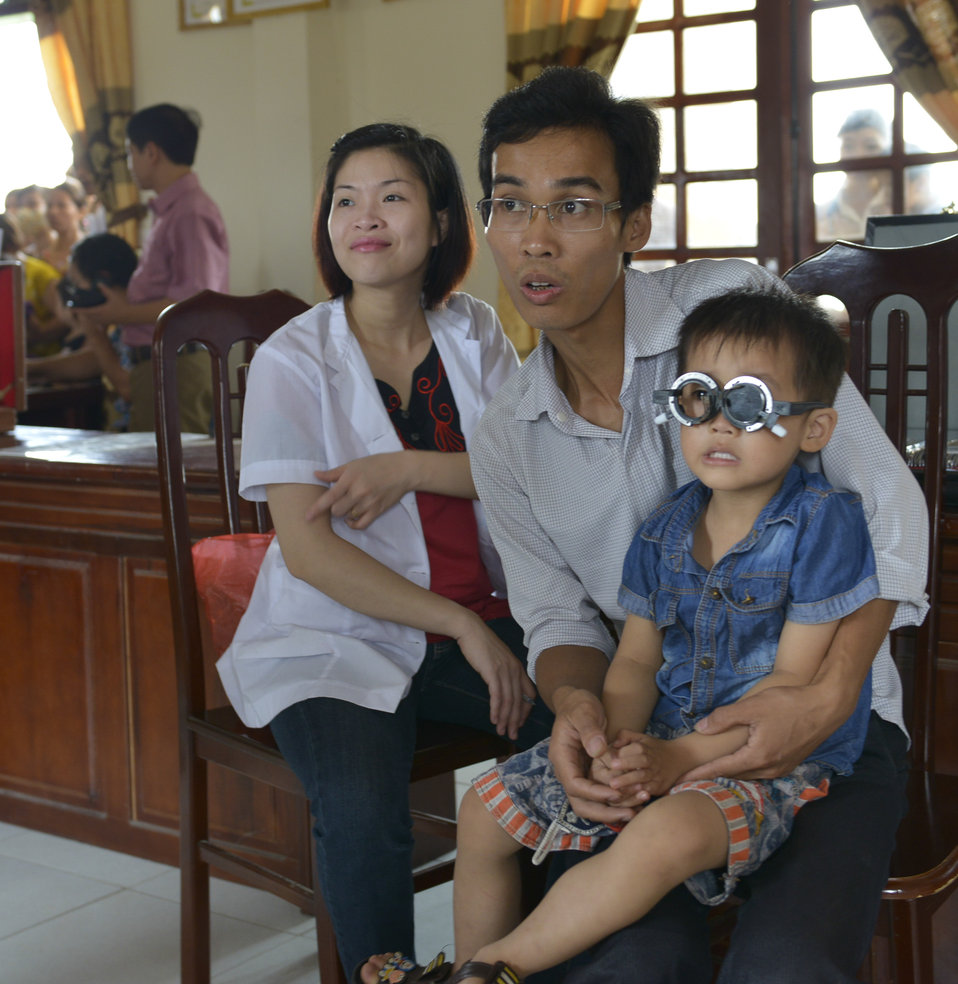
Eye screening for kindergarten children in Quoc Oai district of Hanoi

Quoc Oai, Hanoi. May 31, 2014.